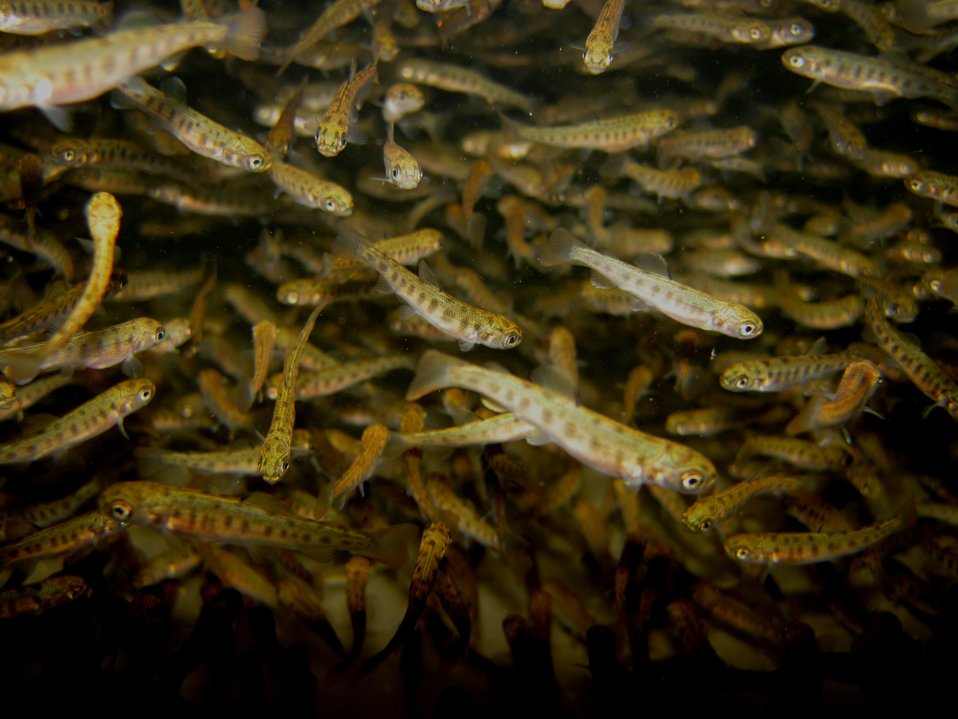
Hot Creek Rainbow Trout Fry

Hot creek rainbow trout are the salmonid of choice for mitigation stockings in reservoir tailwaters.

Location: Garrison Dam NFH

Photo Credit: Rob Holm / USFWS

Photo Contest Entry #124